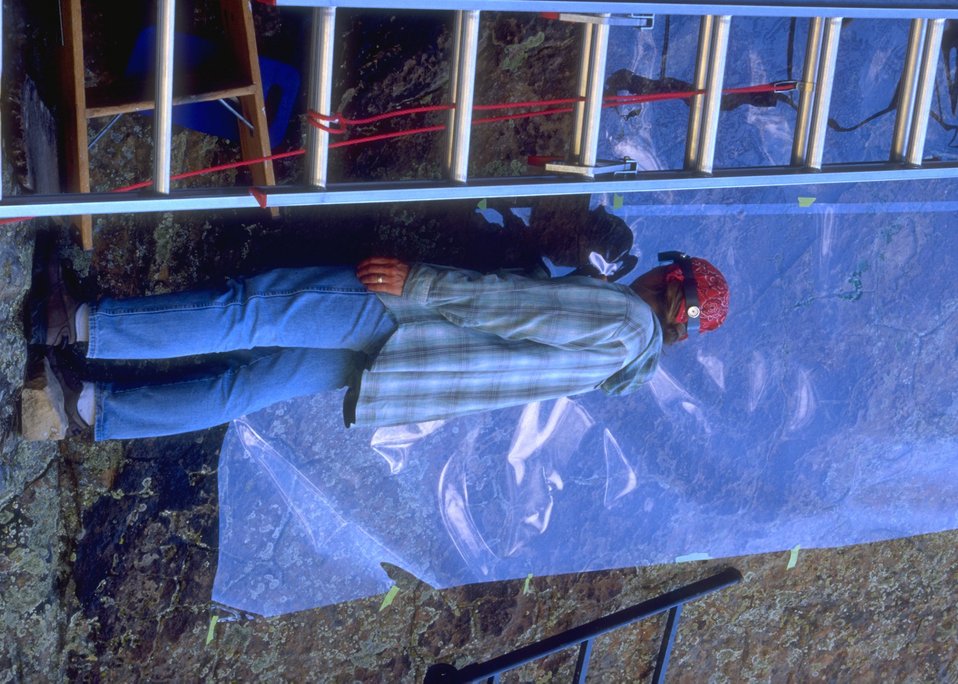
Mapping a petroglyph panel in Whoopup Canyon, Newcastle Field Office.